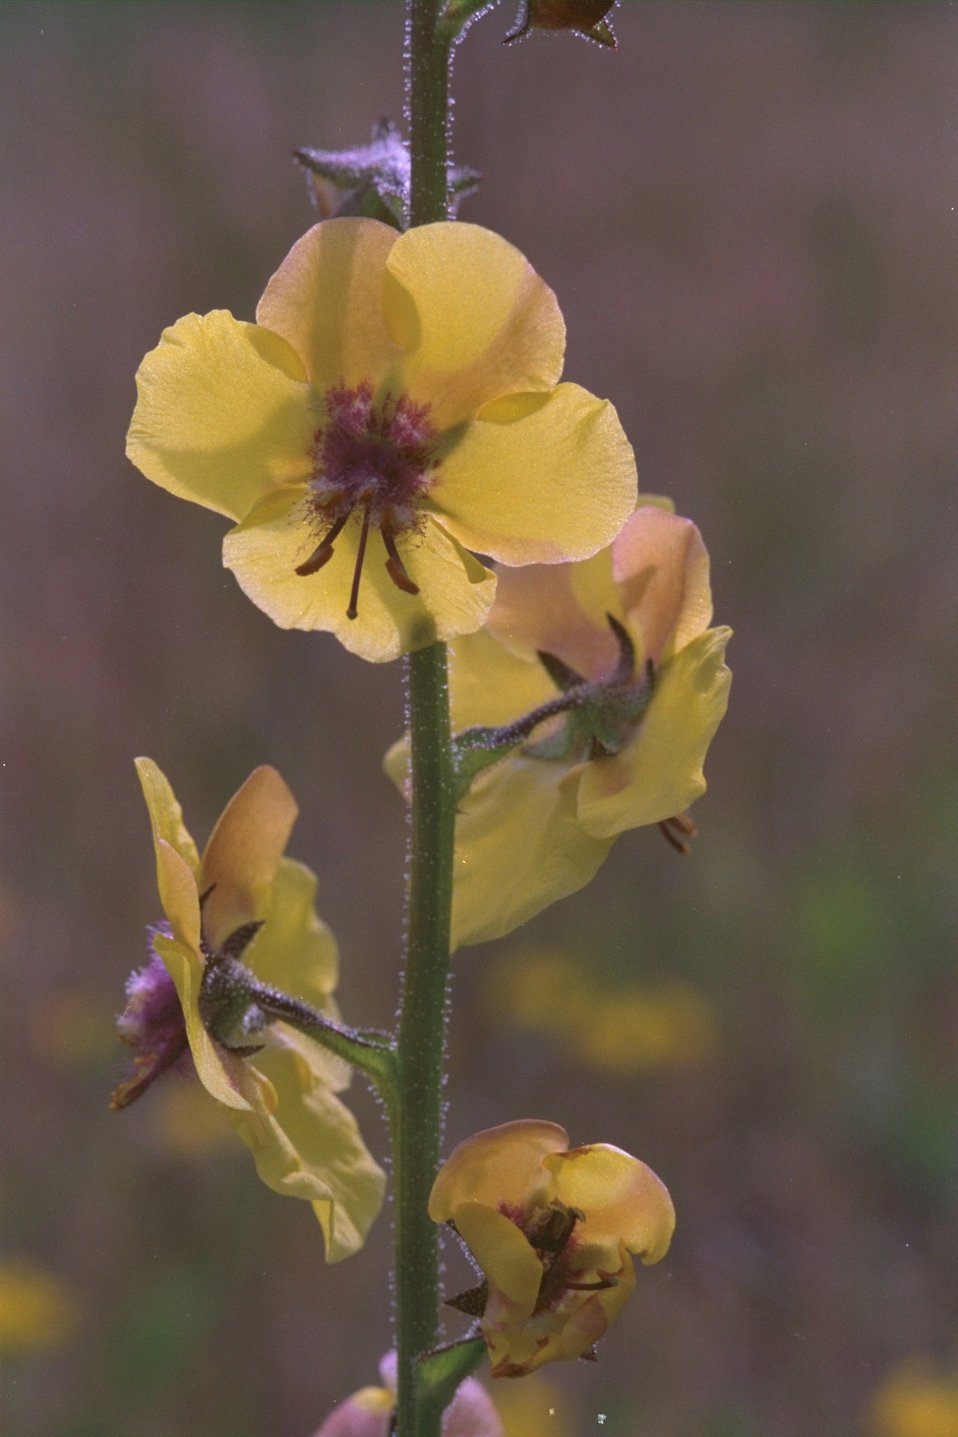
Moth mullein (Verbascum blattaria) along Wasson Canyon road.